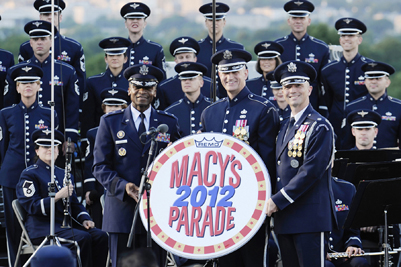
Macy Day Parade Invite

Maj. Gen. Darren W. McDew, Col. A. Phillip Waite and Lt. Col. Raymond Powell display the Macy's Day parade emblem June 4, 2011, at The Air Force Memorial in Arlington, Va., after receiving an invitation for the U.S. Air Force Band and U.S. Air Force Honor Guard to perform during the 2012 parade. General McDew is the Air Force District of Washington commander. Colonel Waite is the USAF Band commander, and Colonel Powell is the USAF Honor Guard commander